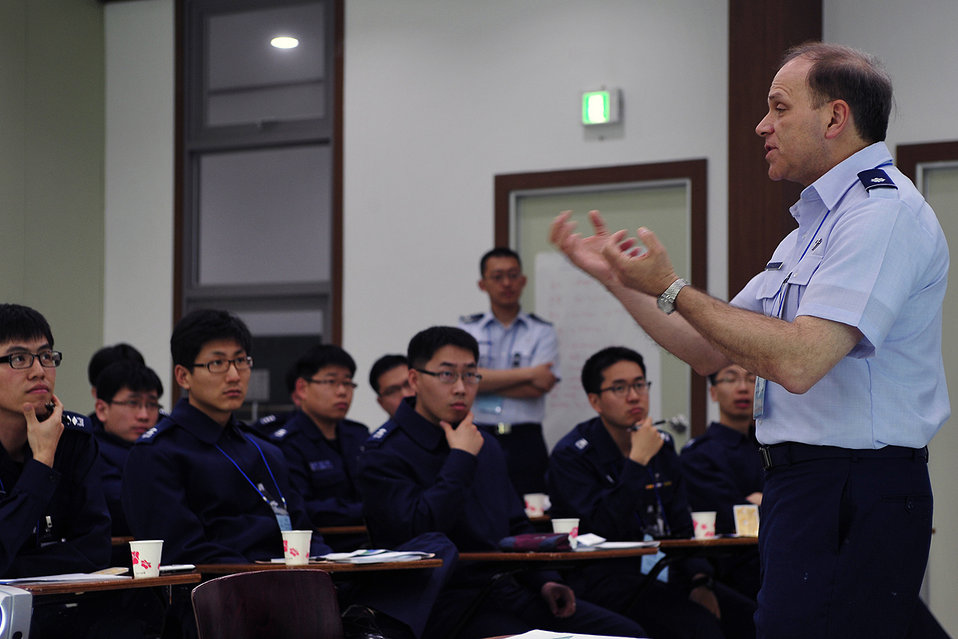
ASIST

Chaplain (Lt. Col.) Michael Heuer speaks to a group of South Korean air force chaplains April 27, 2010, during Applied Suicide Intervention Skills Training at Osan Air Base, South Korea. Chaplain Heuer is a staff chaplain at the Air Force Intelligence, Surveillance and Reconnaissance Agency at Lackland Air Force Base, Texas.